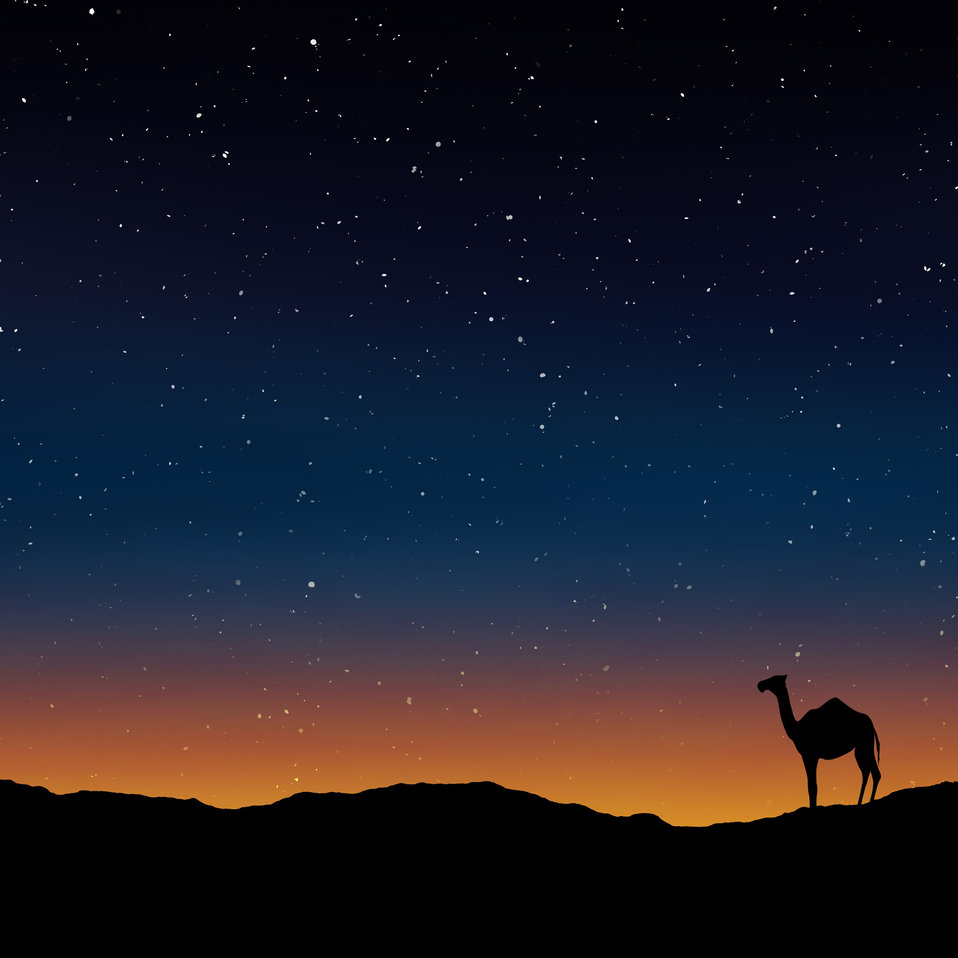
Dusk and camel drawing.